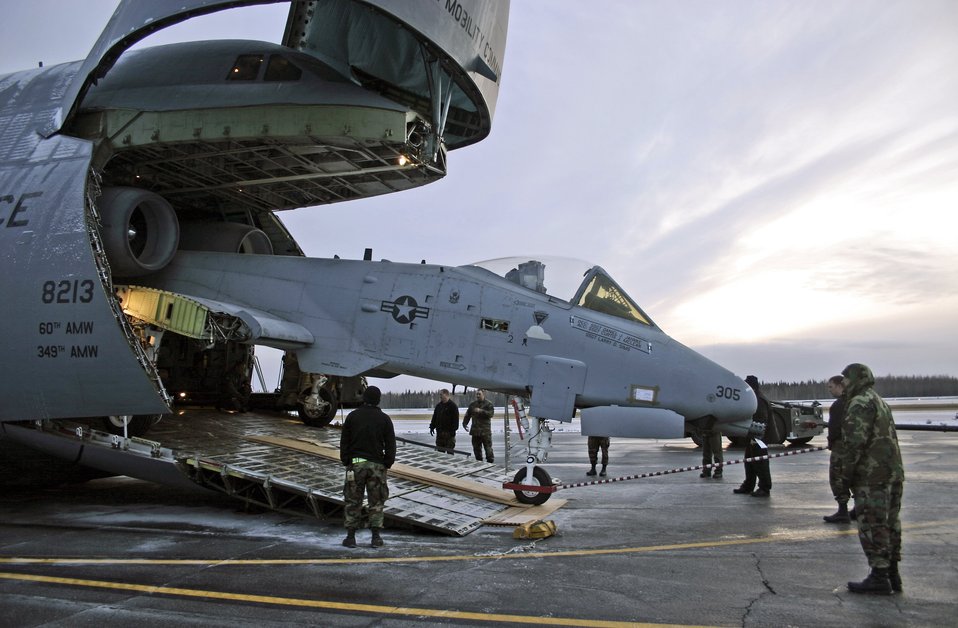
Eielson's last A-10 nestles into new home

The team working on the inactive A-10 Thunderbolt II winches the aircraft into the C-5 Galaxy for transport to the Robbins Air Force Base, Ga. Museum of Aviation Flight and Technology Center Oct. 6 on the flightline at Eielson Air Force Base, Alaska. The aircraft was disassembled into six different sections in three days.